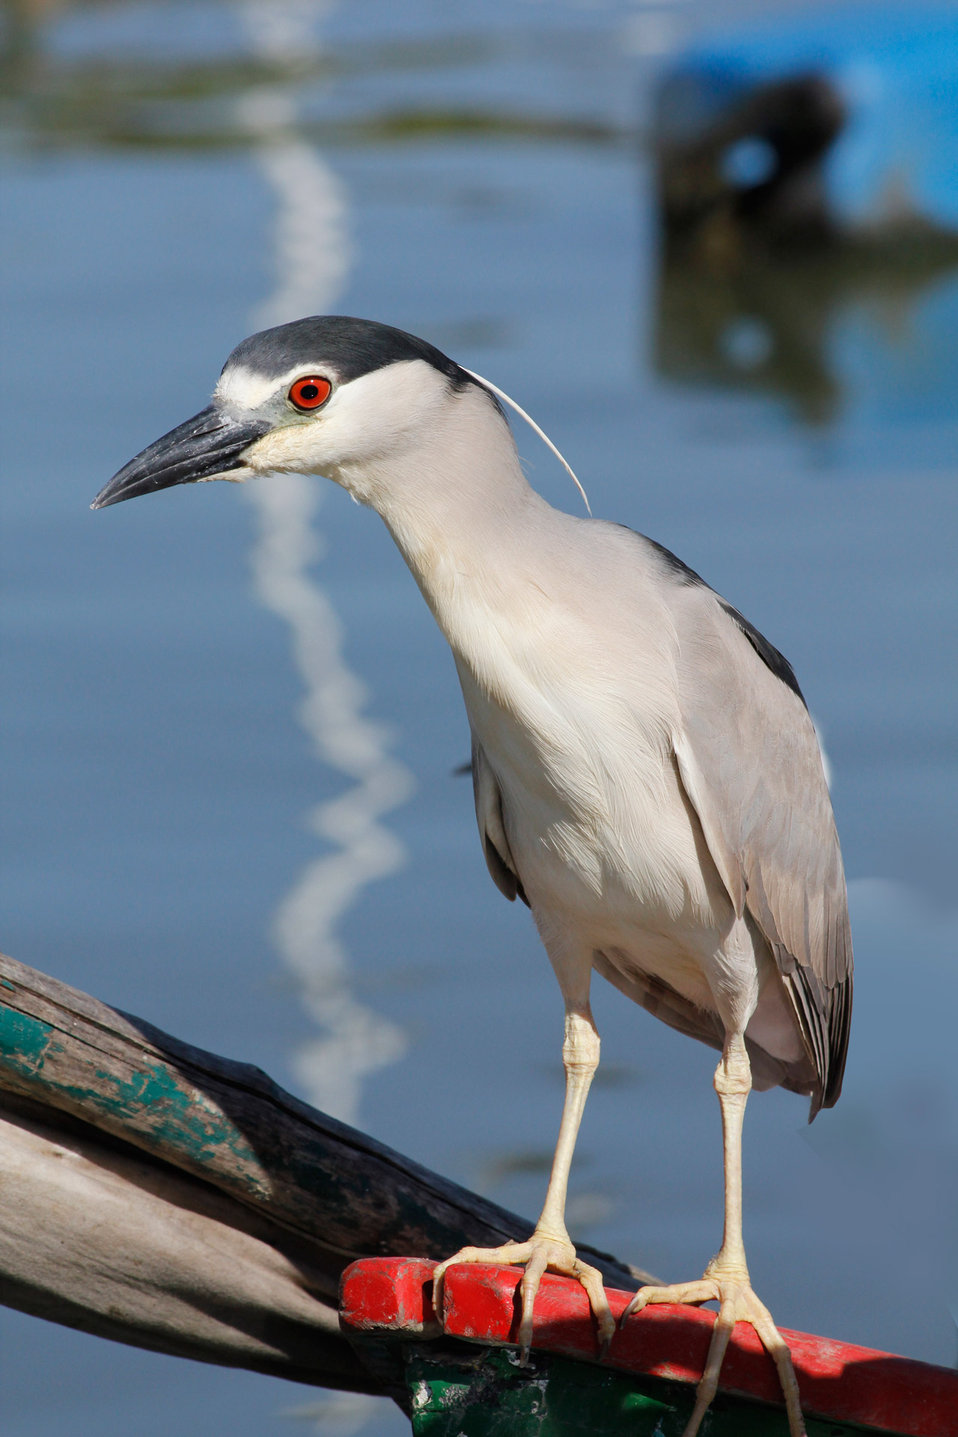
Alone

Waterfowl in southern brazil.